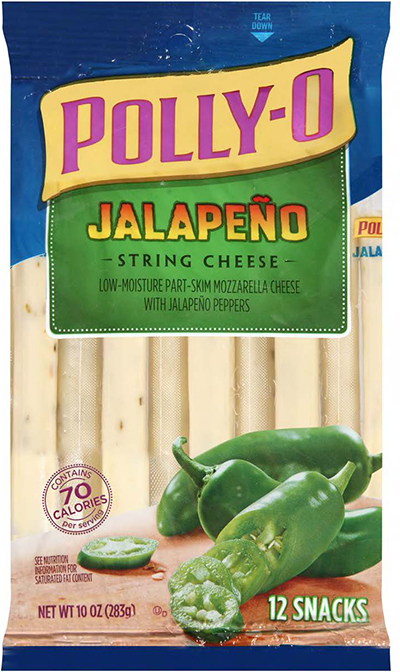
RECALLED – Cheese

October 25, 2013 – Product Recall – Kraft Voluntarily Recalls Some Varieties of Kraft And Polly-O String Cheese And String Cheese Twists Due to Premature Spoilage.